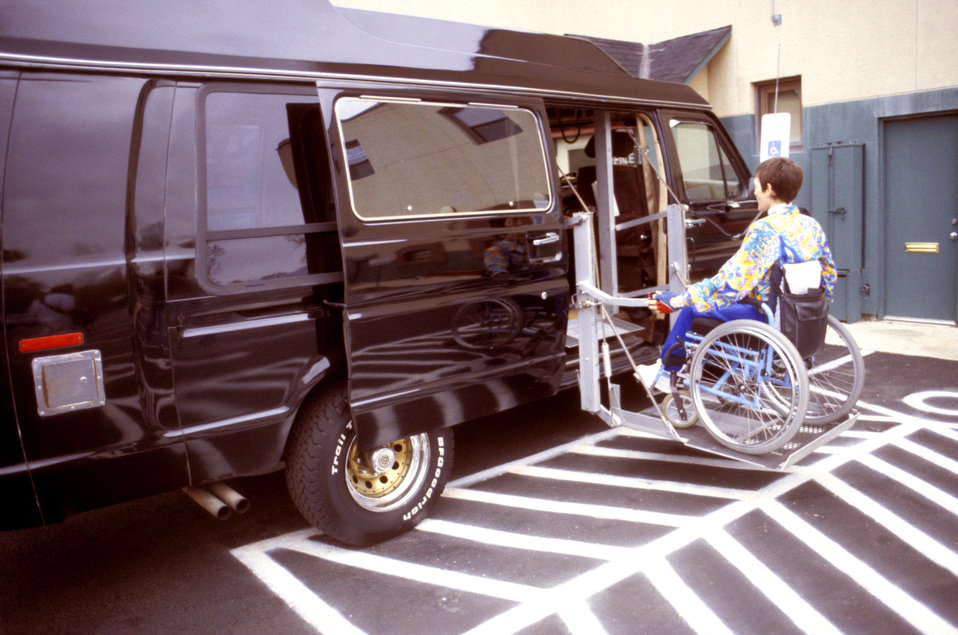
This was the third of six images (PHIL# 9068 - 9073) depicting a wheelchair-seated woman was shown in the process of exiting a wheelchair lift-equipped van parked in a van-accessible parking space. The space displayed both a pole-mounted sign, as well as a designated ground symbol, each adorned with the international symbol of accessibility. In addition, a wide aisle next to the van's parking space had been defined by striping on the ground, allowing ample space for the person using the side-mounted lift to exit safely and efficiently. The images showed the individual having first backed onto the lift, then descending to the ground. The woman then exited onto the striped space next to the van.